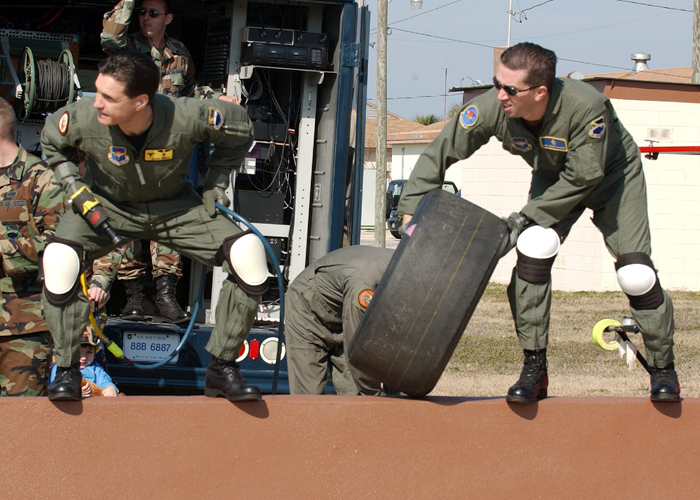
It's the pits!

TYNDALL AIR FORCE BASE, Fla. -- Nine teams here participated in the Air Force Pit Stop competition Jan. 12. Teams vied to see who could change two tires the fastest on the Air Force/Motorcraft Wood Brothers Racing Ford Taurus. A team representing Tyndall's 1st Aircraft Maintenance Unit won with a time of 19.7 seconds. They received the hood from the Motorcraft/Air Force race car that competed at Homestead International Speedway in Homestead, Fla.